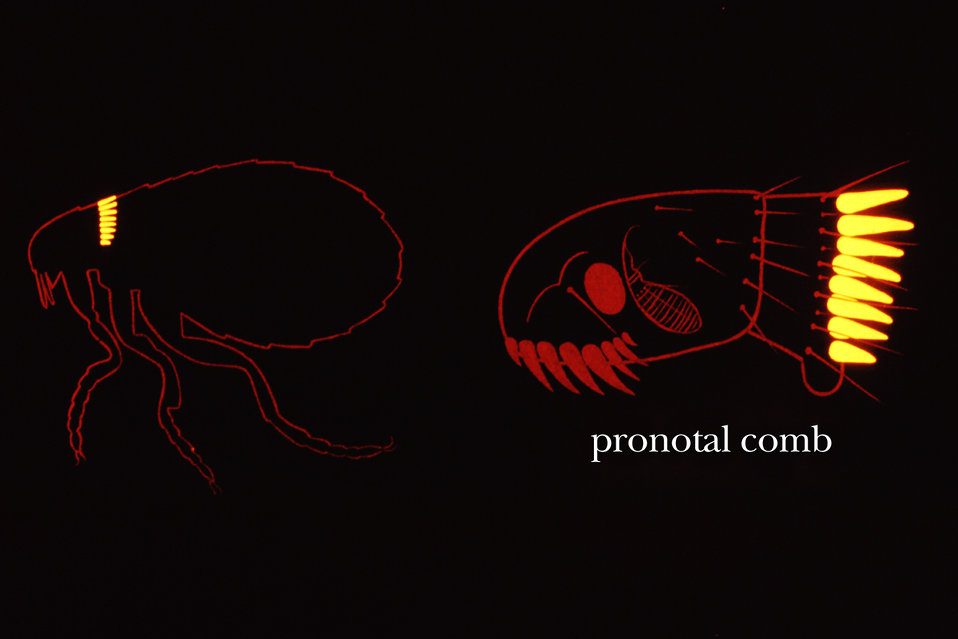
The flea's pronotal comb is a morphologic characteristic on the insect's thoracic region used when identifying these creatures.